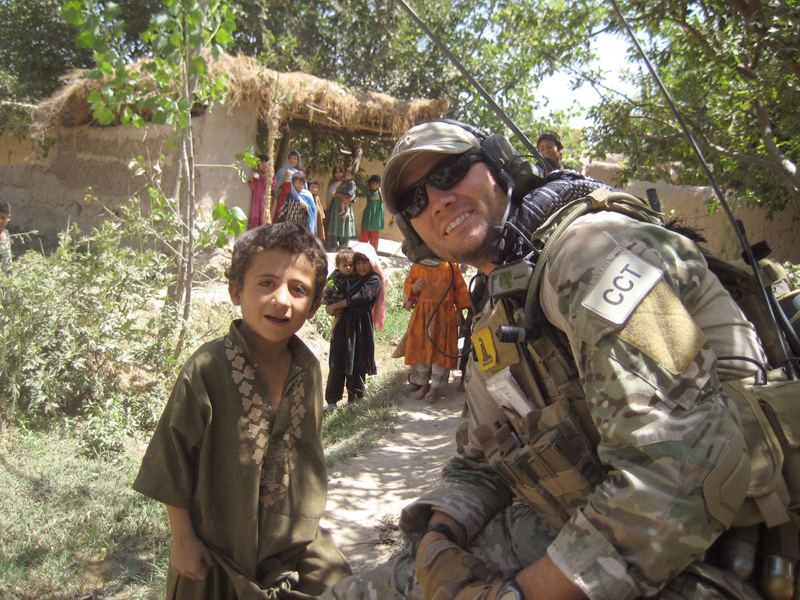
Airman dies

Senior Airman Mark Forester was killed in Uruzgan province, Afghanistan, when his special forces unit came under attack Sept. 29, 2010. Airman Forester was assigned to the 21st Special Tactics Squadron at Pope Air Force Base, N.C.